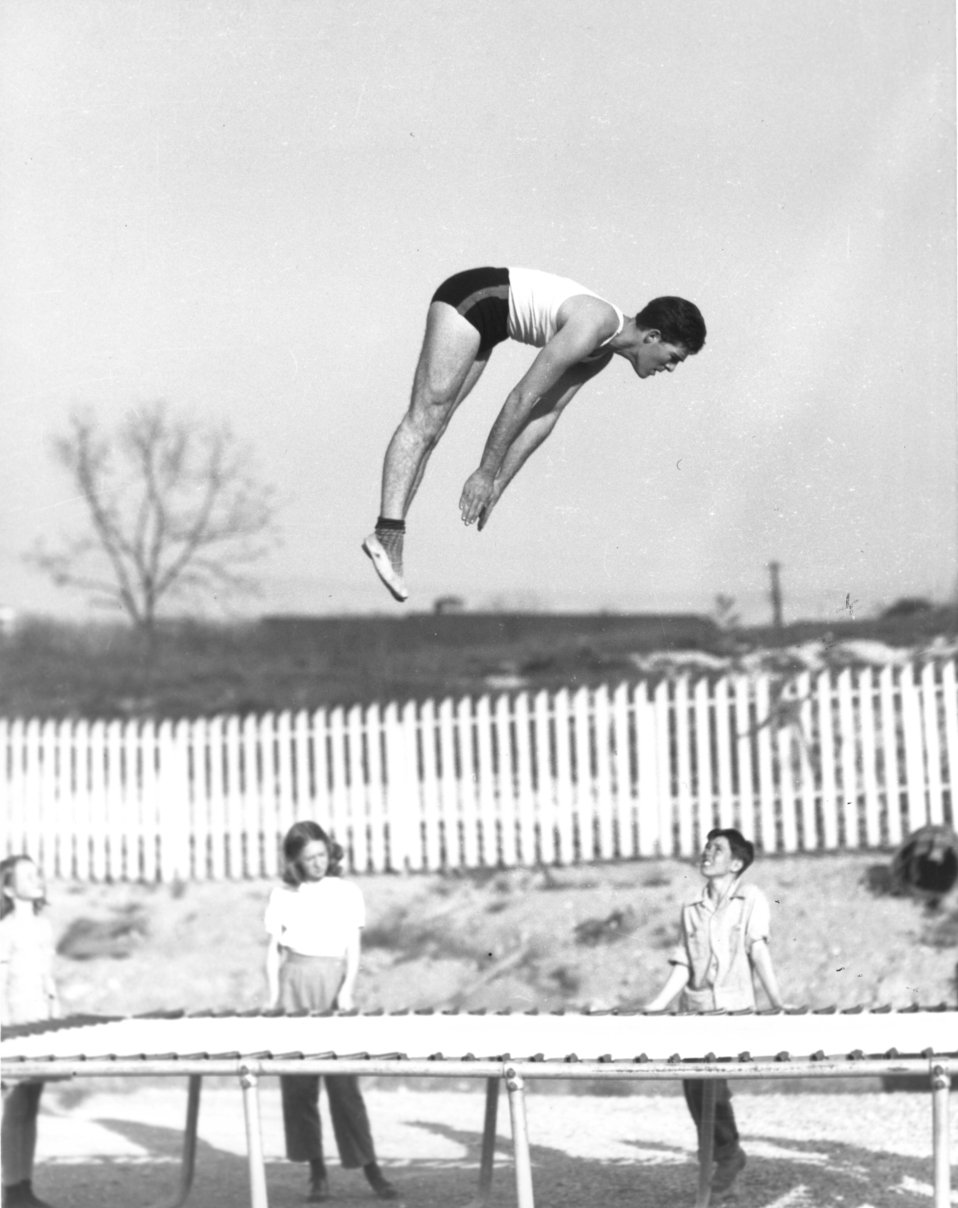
Recreation at Oak Ridge